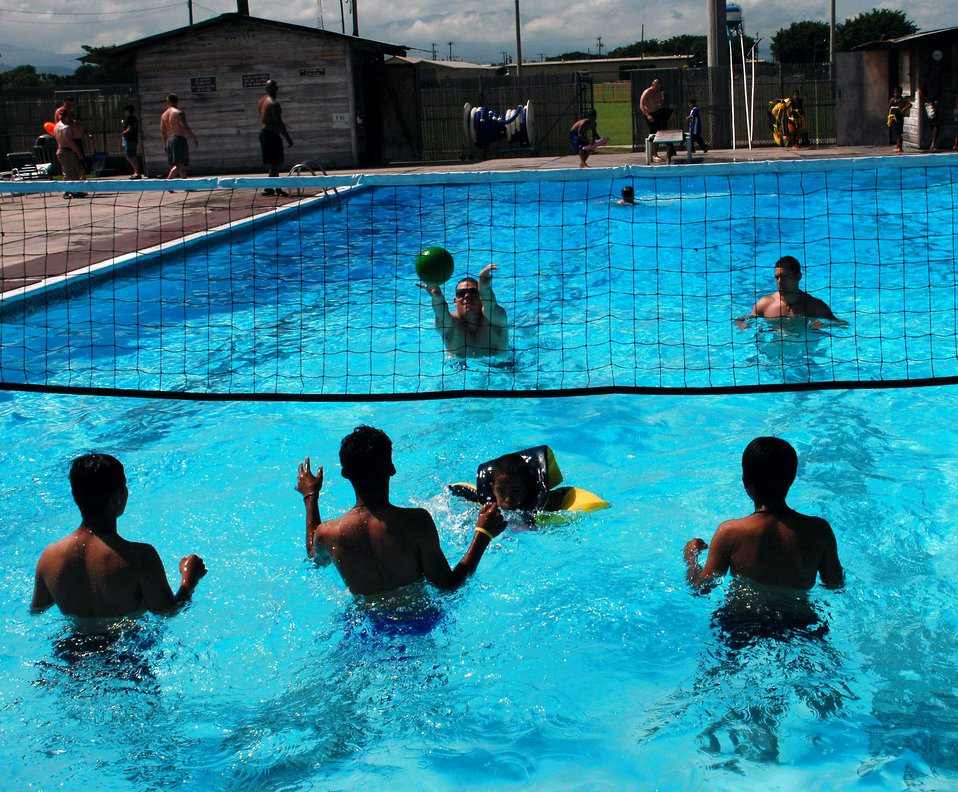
Orphanage kids have special day at Soto Cano

Servicemembers from Soto Cano Air Base, Honduras, play volleyball in the base pool with boys from the Hogar de Ninos Nazareth Orphanage in Comayagua, Honduras. Nearly 60 Soldiers, Sailors and Airmen volunteered for the orphanage kids' day Aug. 2 on base.